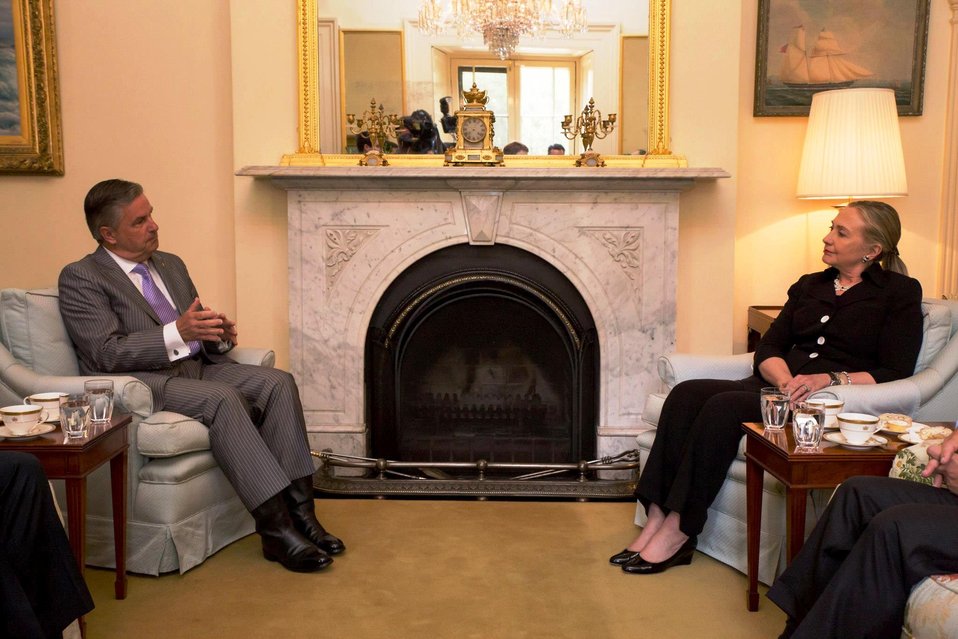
Secretary Clinton Meets With Rear Admiral Searce

U.S. Secretary of State Hillary Rodham Clinton meets with Governor of South Australia Rear Admiral Kevin Searce at the Government House in Adelaide, Australia, November 15, 2012.